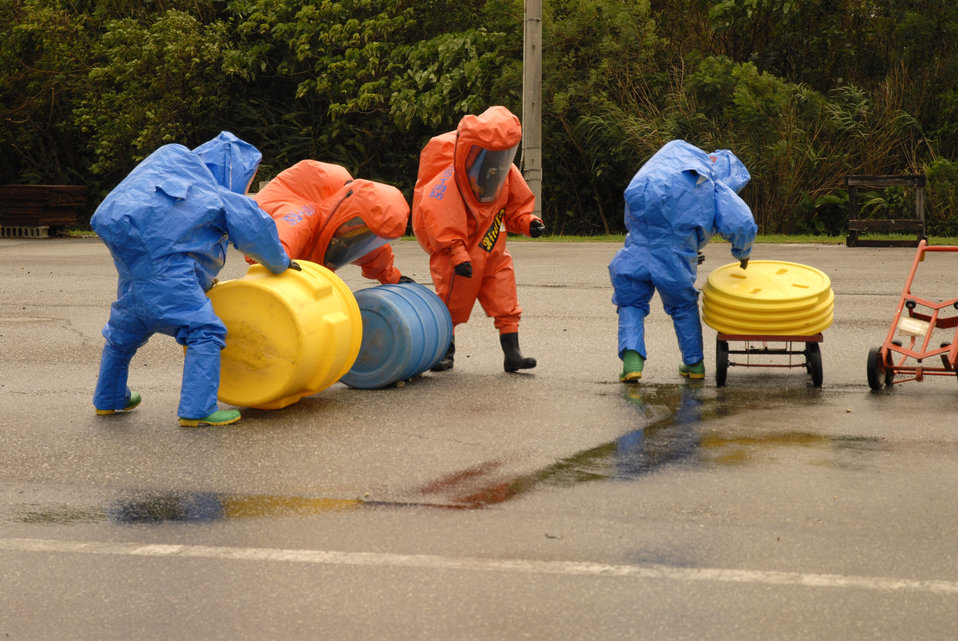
Joint emergency response training

Hideki Tomishima and Tsuyoshi Taira of the 18th Civil Engineer Squadron (in blue) and Jun Ikema and Shintaro Ameku of the Nirai Fire Department respond to a simulated contaminated site at Kadena Air Base, Japan, on July 14. The joint training helps the organizations understand each other's capabilities when responding to an off-base incident.